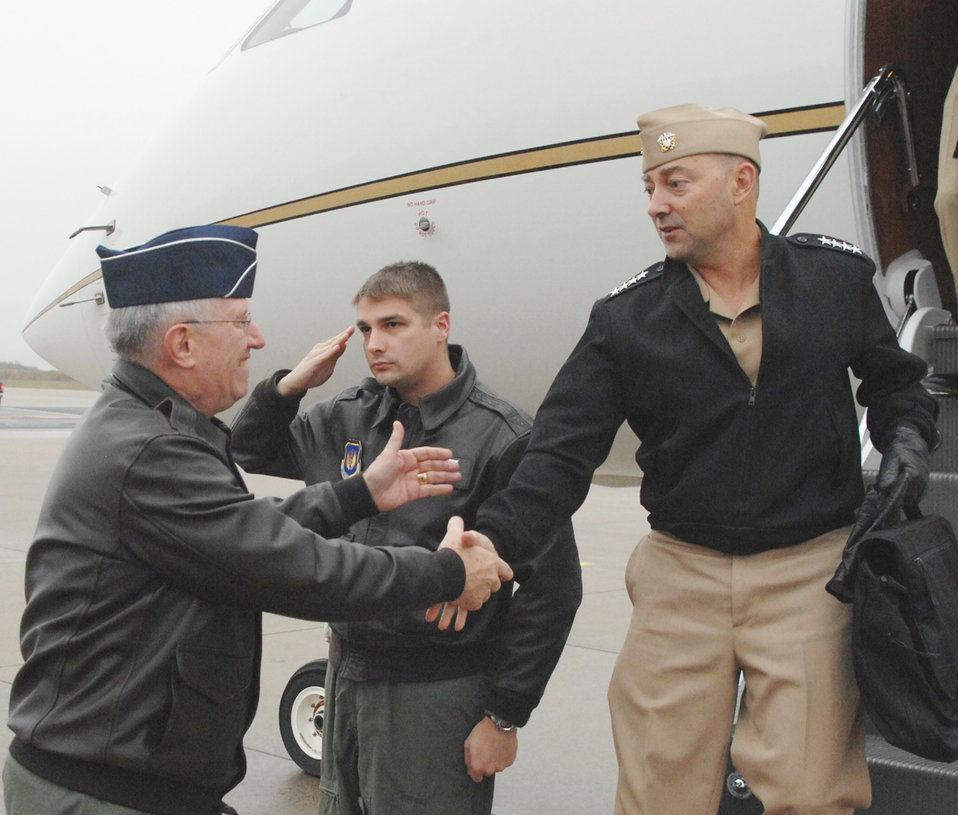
Supreme Allied Commander Europe visits USAFE forces

Navy Adm. James Stavridis is greeted by Gen. Roger A. Brady Nov. 10, 2009, at Ramstein Air Base, Germany. Admiral Stavridis, the commander of U.S. European Command and Supreme Allied Commander in Europe, met with General Brady, the commander of U.S. Air Forces in Europe, to discuss USAFE's vital role in accomplishing the EUCOM mission.